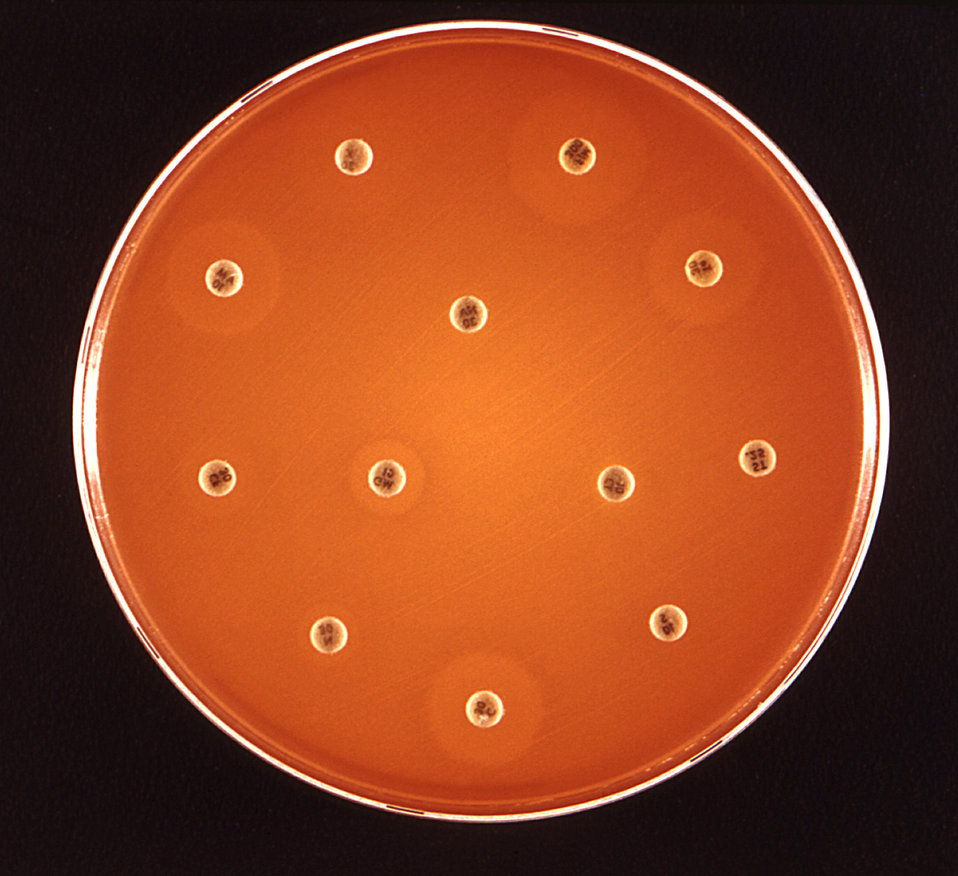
This 1972 image depicted a Mueller-Hinton agar culture plate that had been used in an antibiotic susceptibility test (AST). Known as the Kirby-Bauer method, each of the small labeled discs, or wafers, contained an antibiotic cocktail. The light halos surrounding a number of the discs, also known as 'reaction zones', represented regions in which the bacteria on the agar's surface did not thrive, due to their sensitivity to the antibiotic that had been soaked into these respective discs.